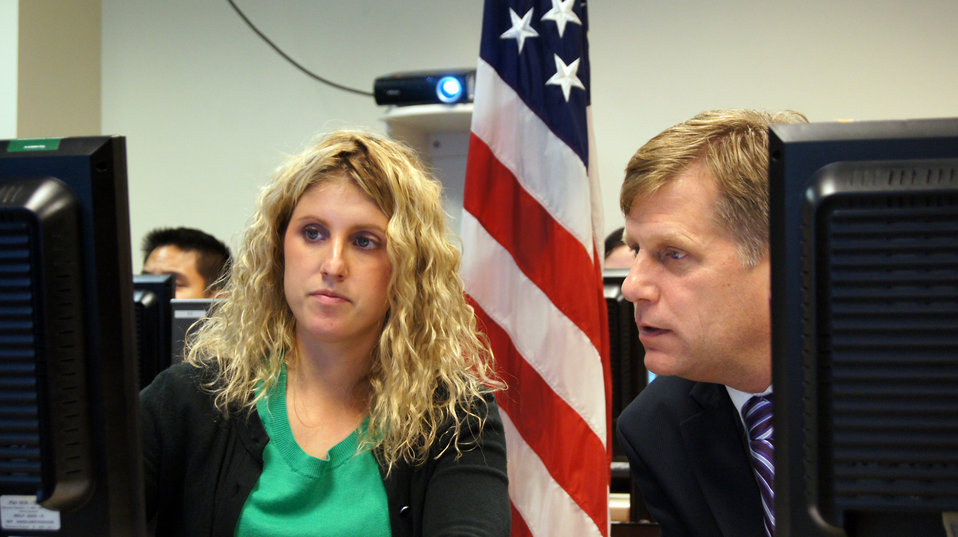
Ambassador McFaul Participates in a Twitter QandA

U.S. Ambassador to Russia Michael McFaul participates in a Twitter Q and A at the U.S. Embassy in Moscow, Russia, September 26, 2012.